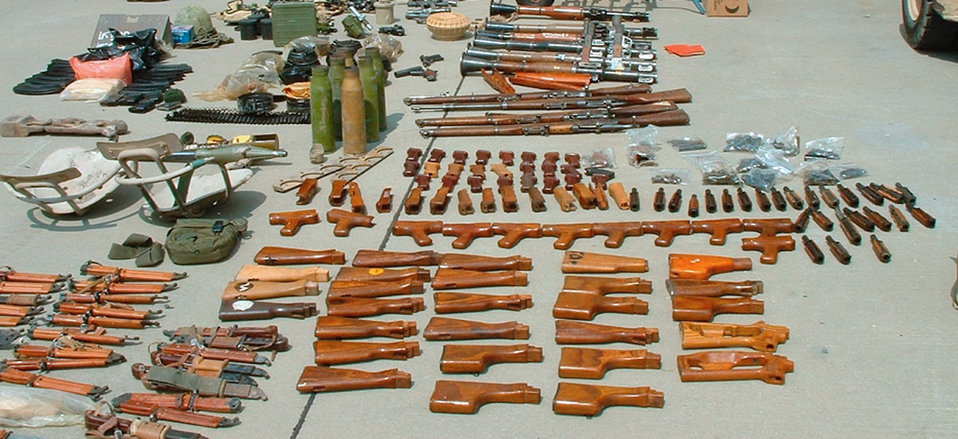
Airman sentenced in contraband court martial

EGLIN AIR FORCE BASE, Fla. -- Maj. Gregory McMillion was found guilty of bringing contraband material from Iraq, including the above weapons. Major McMillion was found guilty on three of the four charges against him and is sentenced to one year confinement and dismissal from active duty.